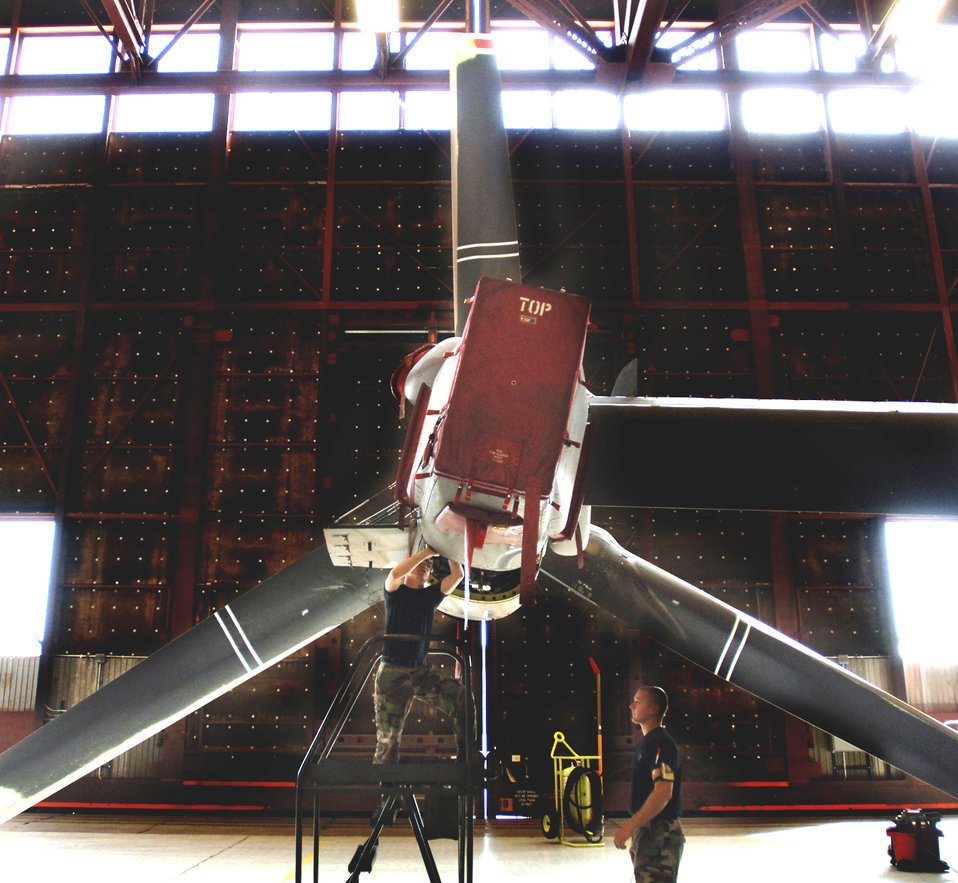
Keeping them flying

Senior Airman Jason Rice and Senior Airman Gerald Heckwine perform maintenance on a CV-22 Osprey at Kirtland Air Force Base, N.M.